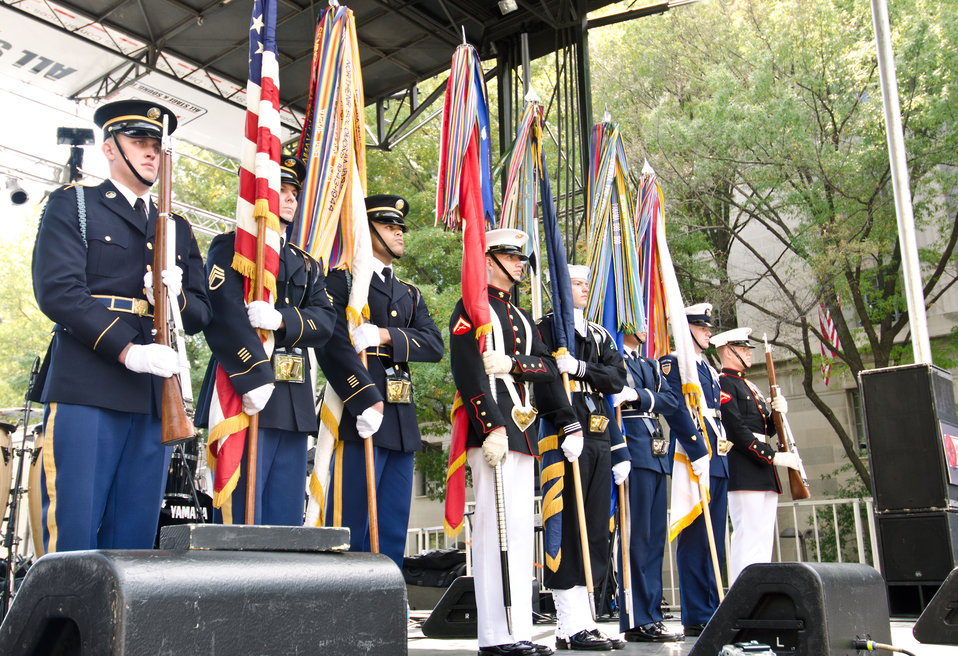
Military Honor Guards presents the Colors at the opening of the Taste of Agriculture Deputy Chief of Staff Carole Jett opens the Taste of D.C., event that highlights more than 70 eateries, 30 specialty beer providers, the United Service Organization (USO) Metropolitan Washington, and live bands. It is anticipated that more than 500,000 people will attend over the course of the three-day event, which extends from the White House to the Capitol, along Pennsylvania Ave. in Washington D.C. on Saturday, October 6, 2012.